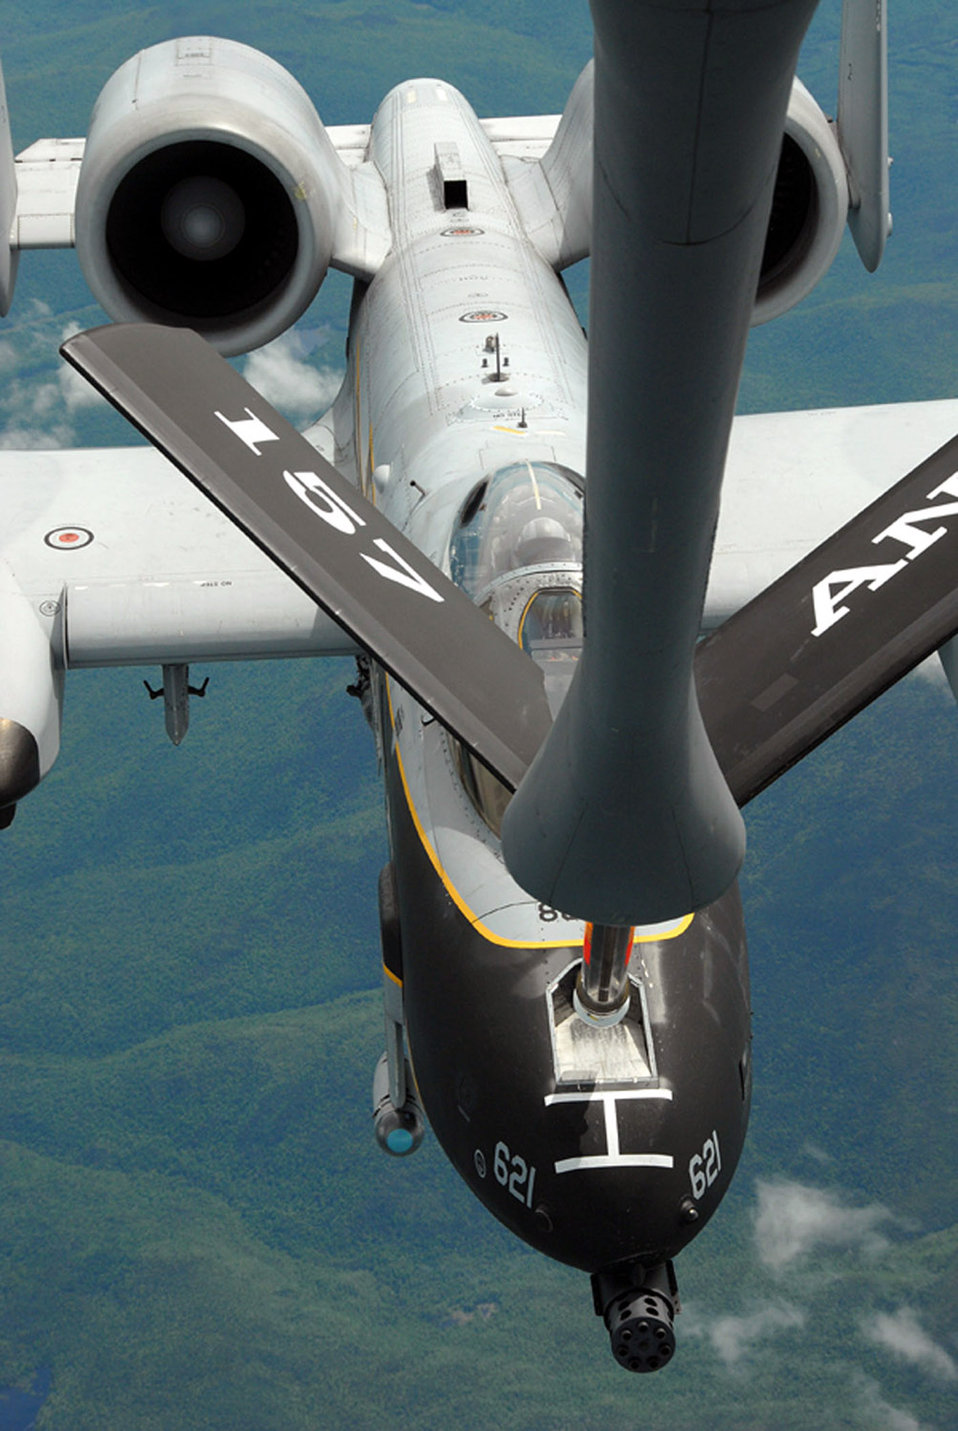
Refueled

An A-10 Thunderbolt II from the Connecticut Air National Guard's 103rd Fighter Wing refuels during a special event June 6 promoting Air Force Week New England which will take place in August.